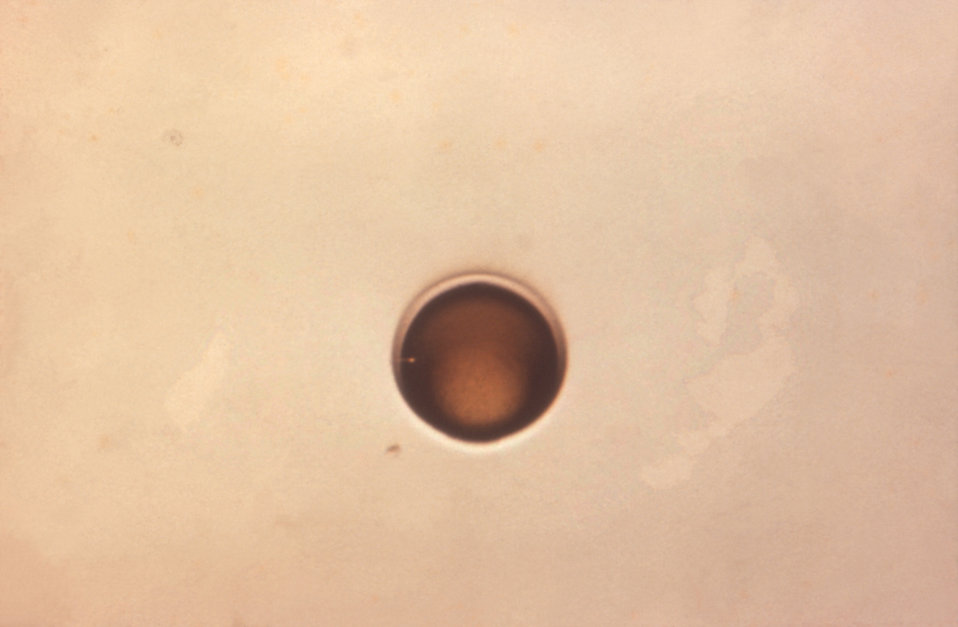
This image depicts a single Type-II Neisseria gonorrhoeae bacterial colony, which had been grown atop a culture medium inside a Petri dish culture plate.